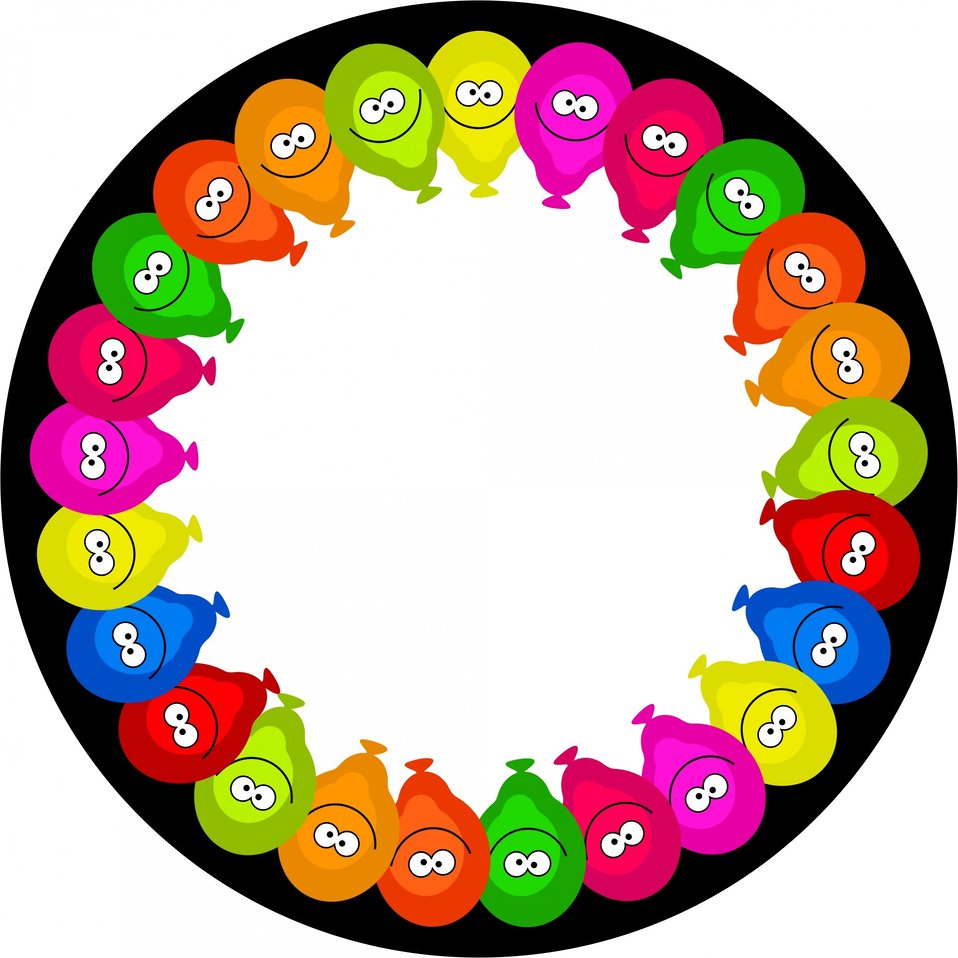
Cartoon balloon border

Birthday party balloon frame border clipart..